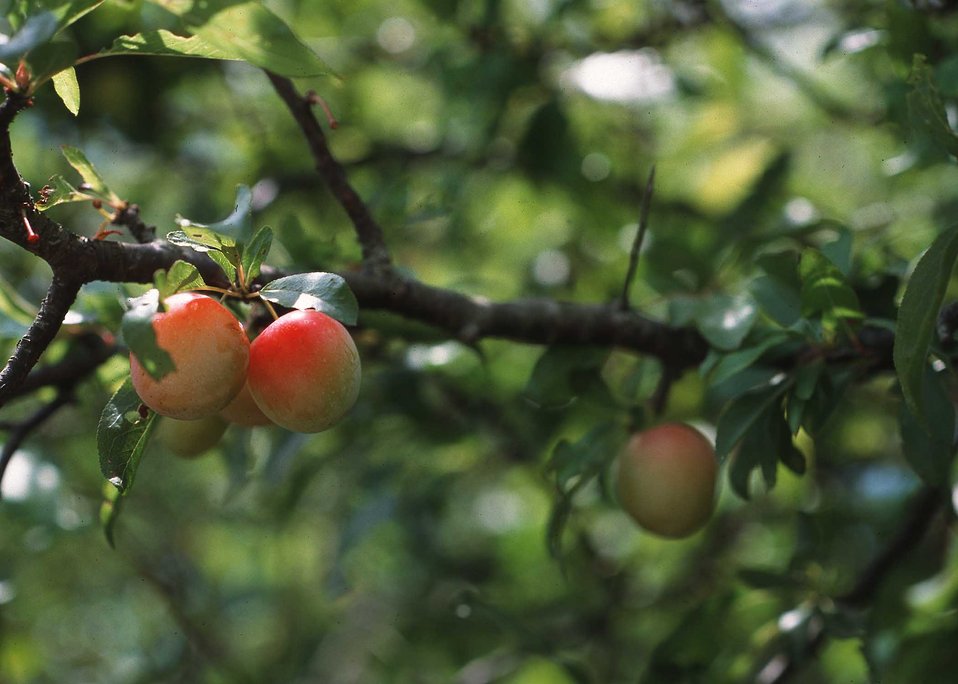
Persimmons.